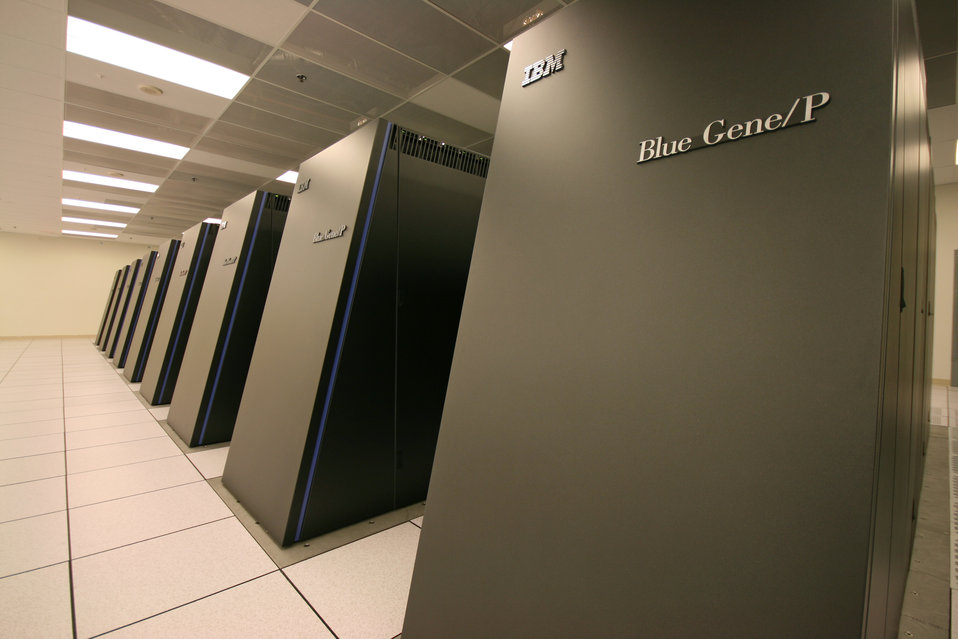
At Lawrence Livermore National Laboratory, dawn a 500 teraflops BlueGene/P system is the foundation for a multi-peta flops computing on Sequoia.